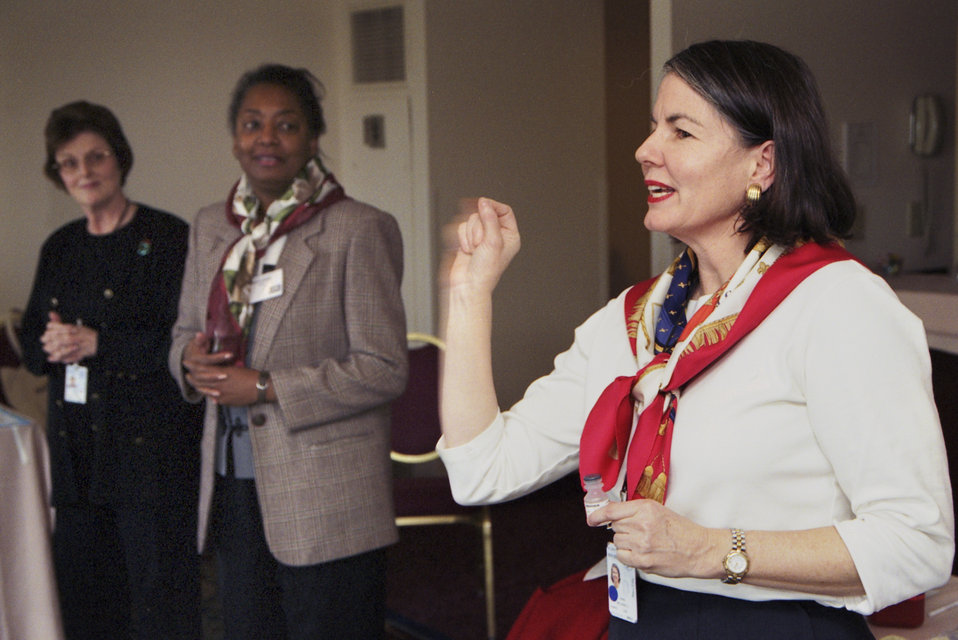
CDC clinician, Melanie King, RN, explains smallpox vaccine application during a 2002 Vaccinator Workshop.